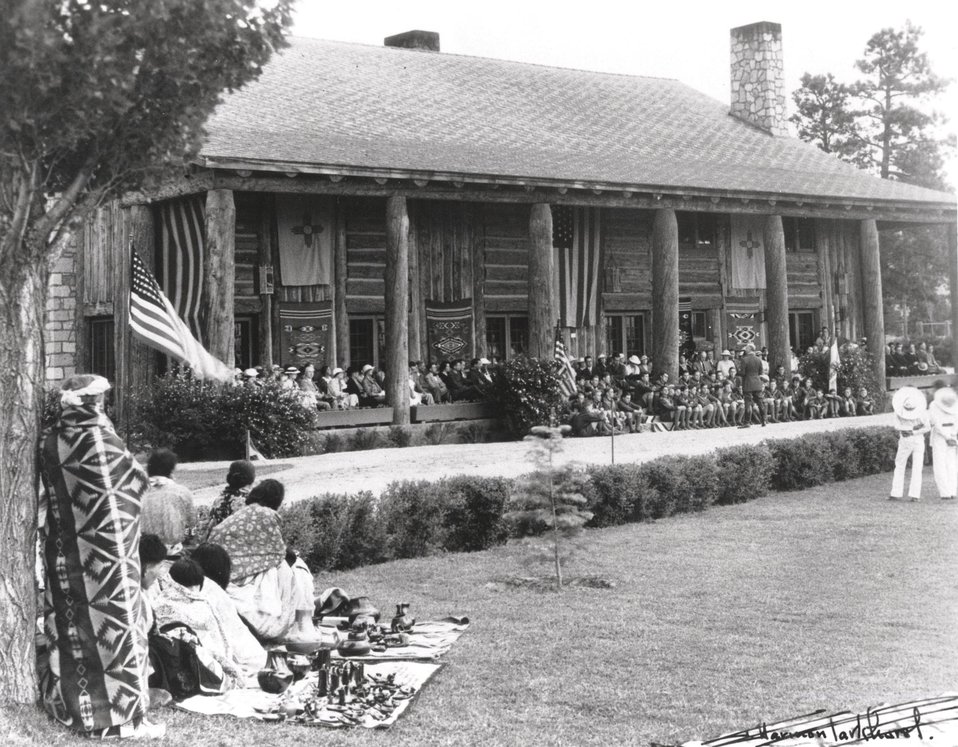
FULLER LODGE EXTERIOR